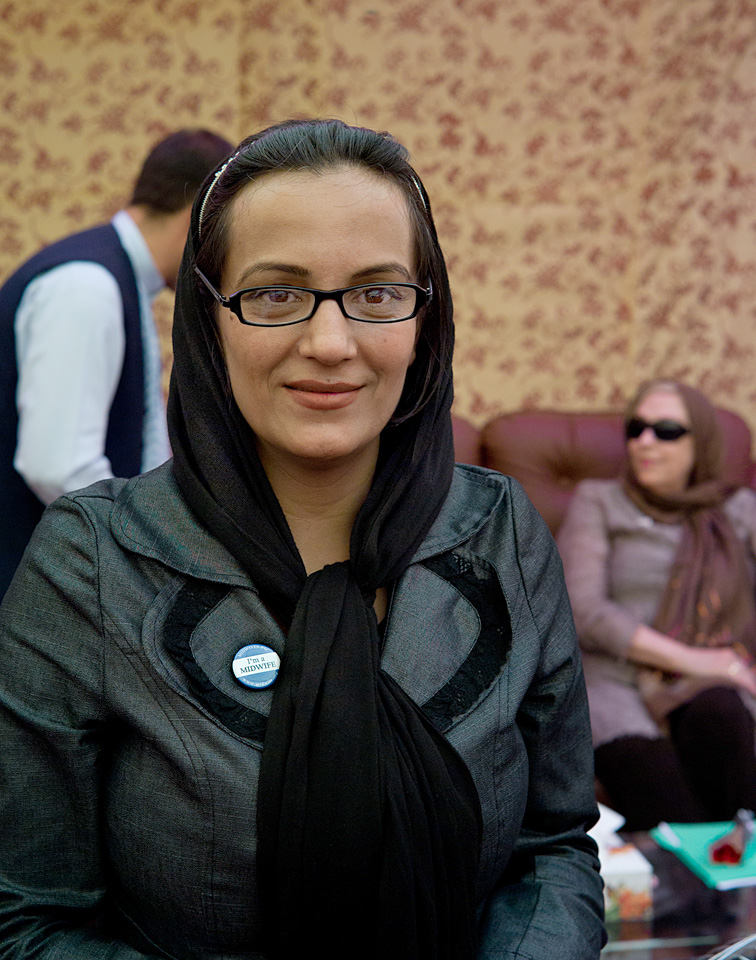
Victoria Parsa, VP Afghan Midwife Association